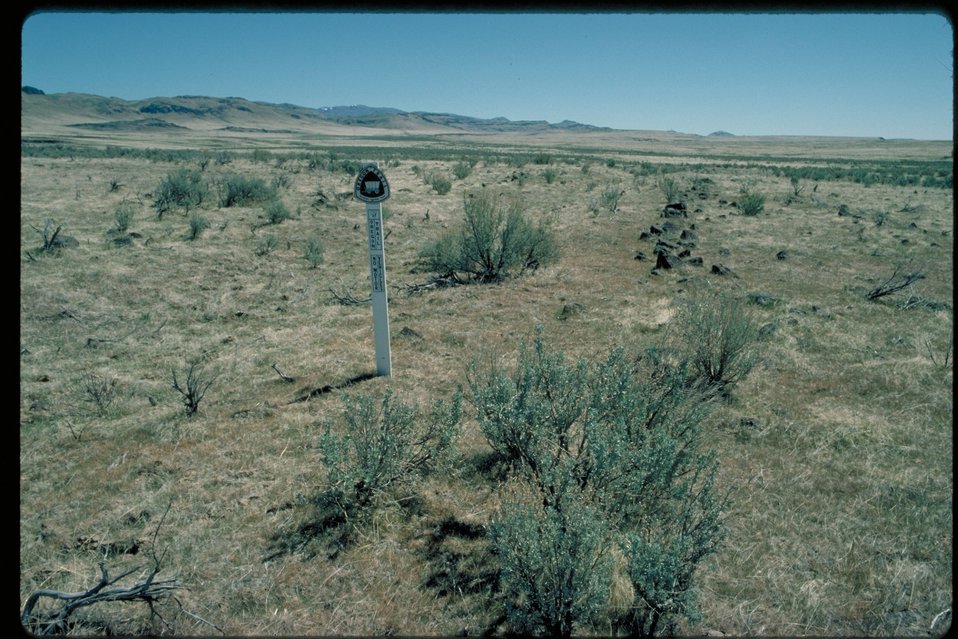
Oregon Trail Southeast of Canyon Creek Lower Snake River District